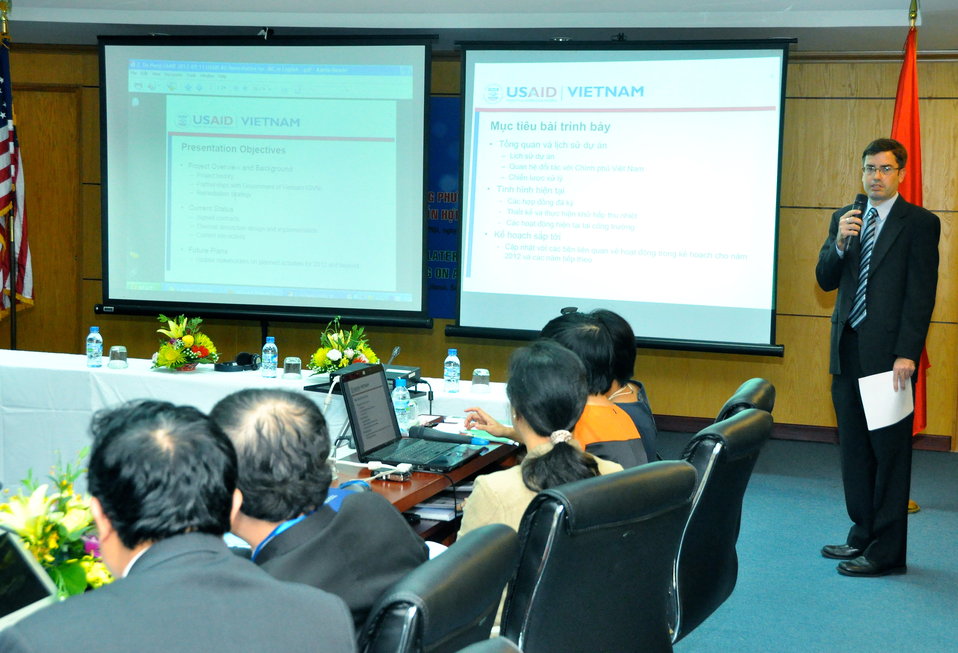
Seventh U.S.-Vietnam Advisory Committee Meeting (JAC)

Hanoi, September 20, 2012